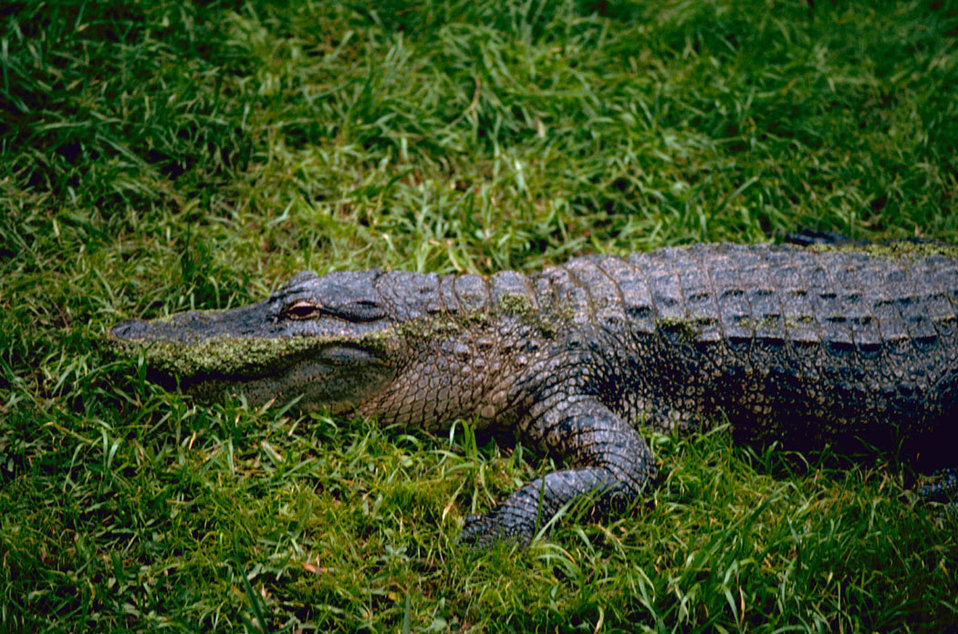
American Alligator.